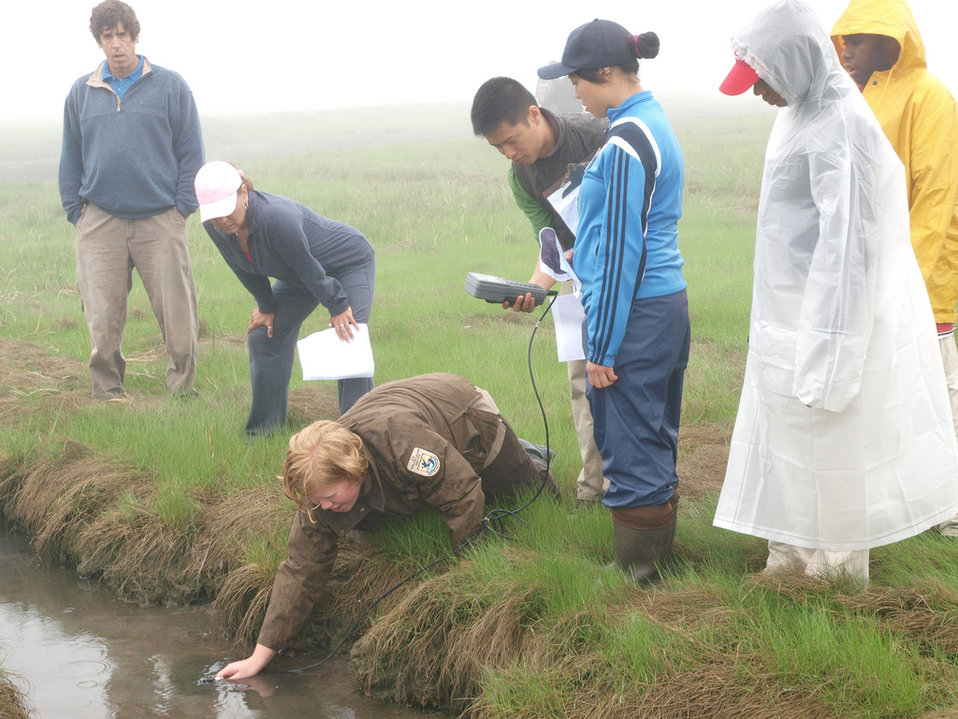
Learning how to measure salinity in a salt marsh

U.S. Fish and Wildlife Service